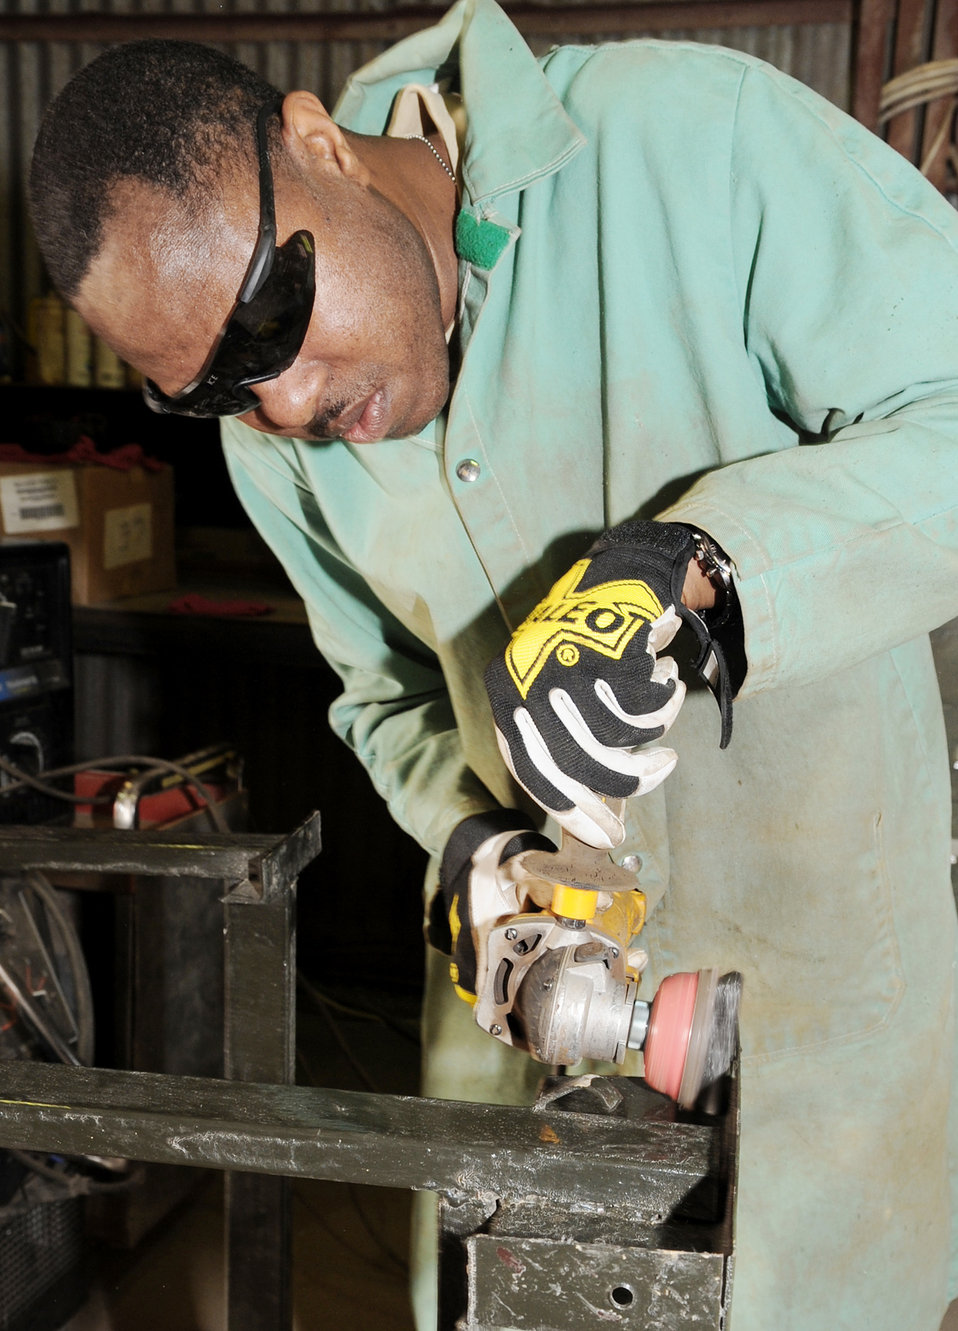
Kirkuk Airmen build desks for Iraqi children

Volunteers from the 506th Expeditionary Civil Engineer Squadron sand down pieces of wood during assembly of school desks for local Iraqi children March 6, 2010, at Kirkuk Regional Air Base, Iraq.